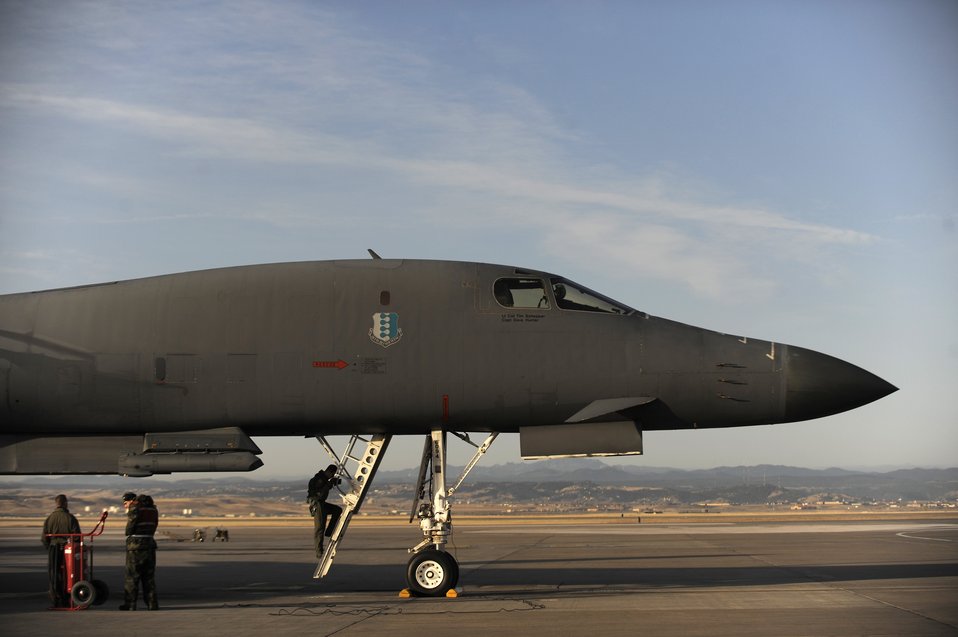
Sniper pod improves capabilities, lethality of B-1

A Sniper Advance targeting pod is attached to the B1-B Lancer at Ellsworth Air Force Base, S.D., March 17. The sniper pod provides a clearer picture for a targeting area.